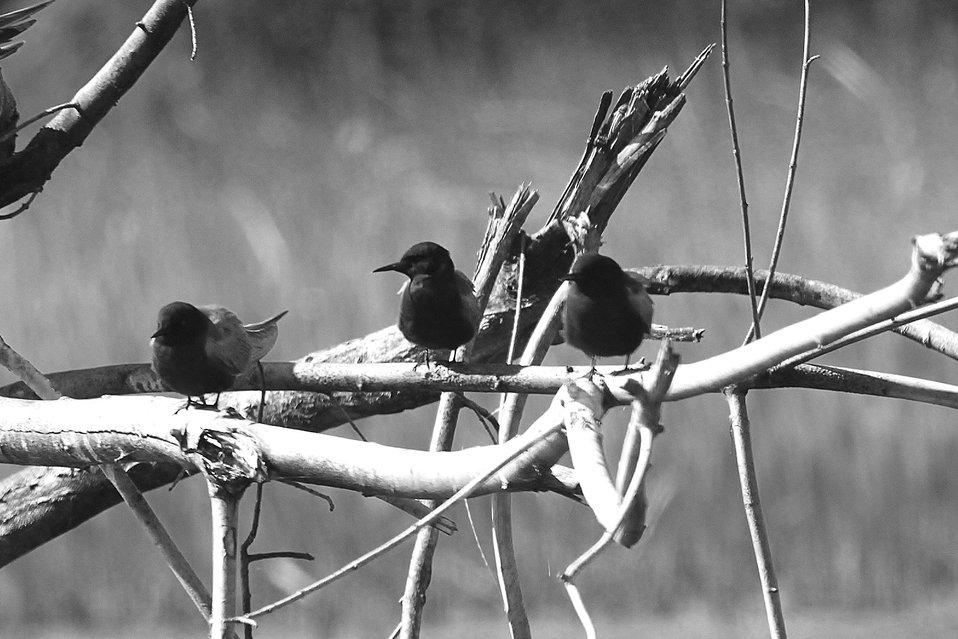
Black Terns At Missisquoi National Wildlife Refuge.